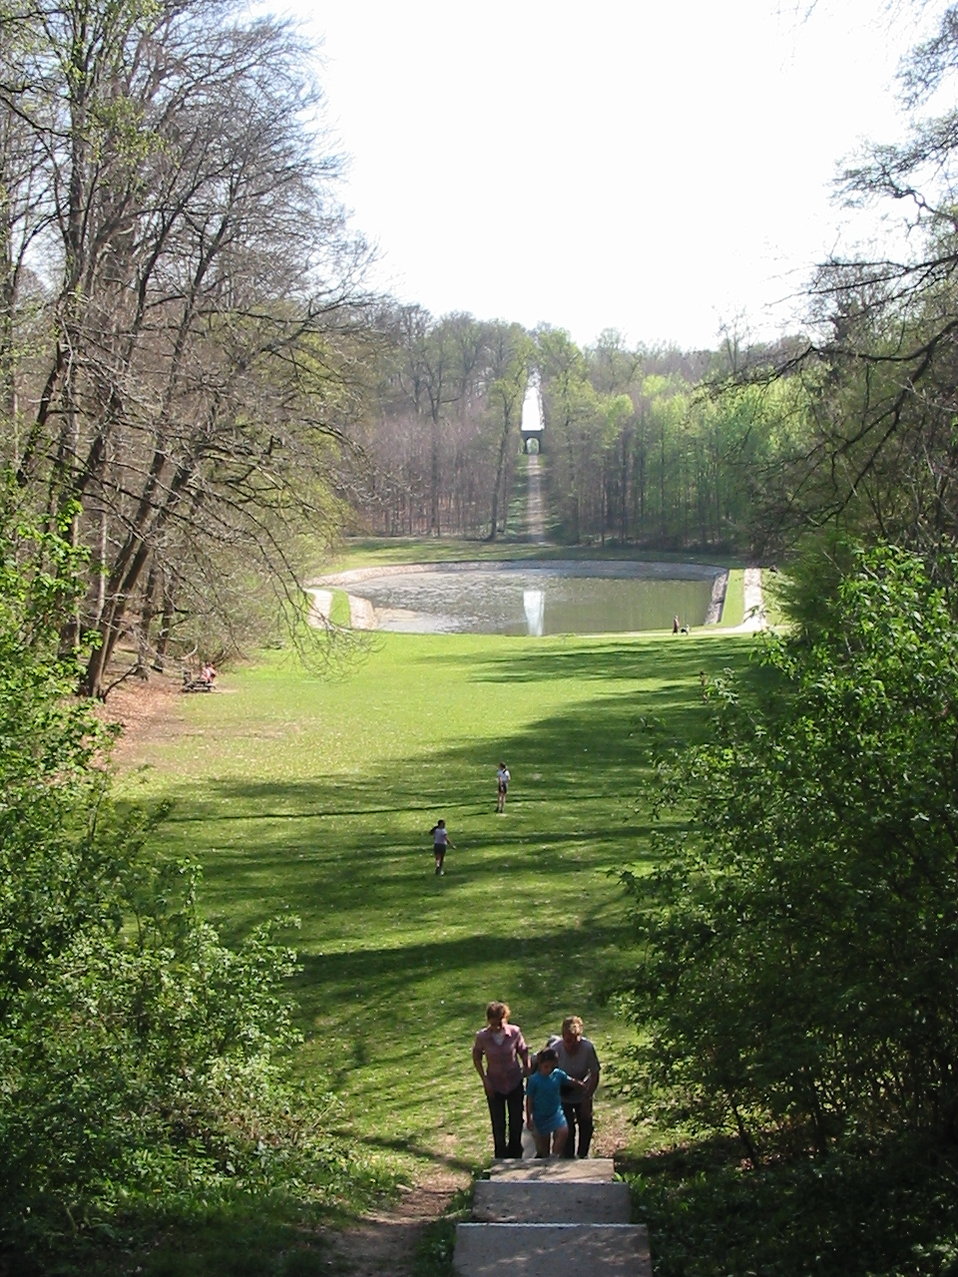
Gaasbeek, The park of the Castle own photo